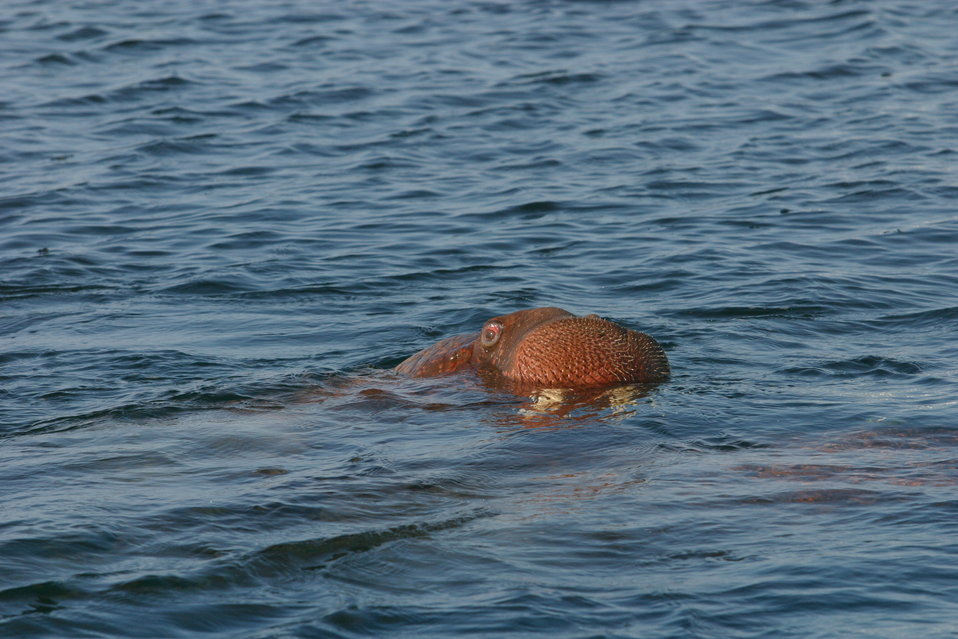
Bull Walrus Swimming

A large Pacific Walrus bull swimming in frigid Alaska waters. This walrus lives near the shallow water areas of the Pacific Alaska coast and subsists mostly on benthic bivalve mollusks.